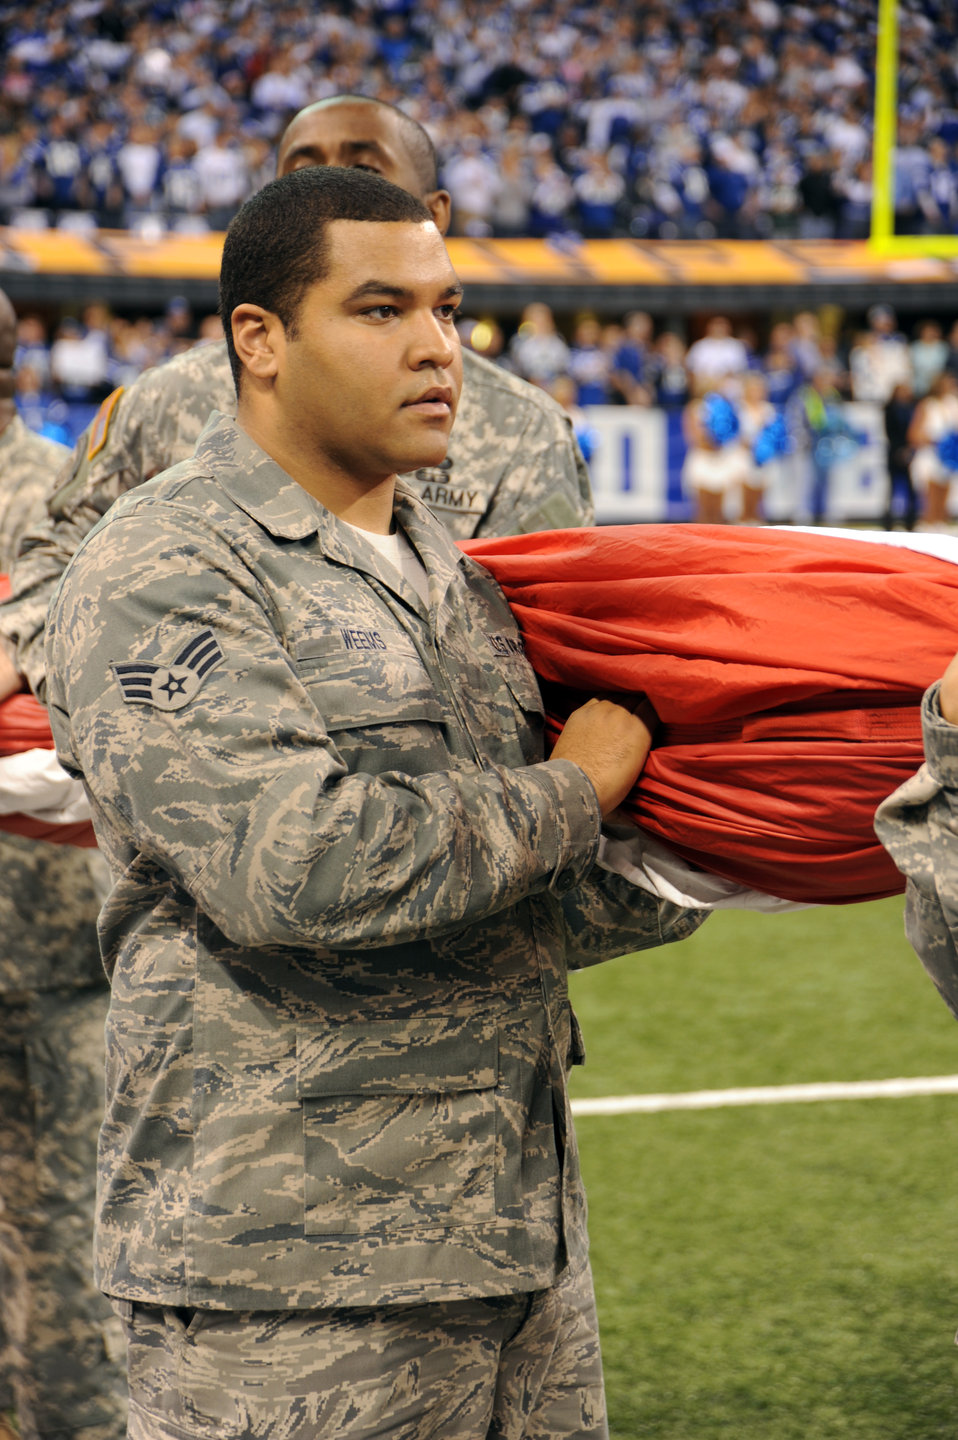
Airmen honor the colors before NFL's AFC Championship Game

Senior Airman Brandon Weems holds on to a 100-yard-long American flag during the national anthem of the NFL's American Football Conference Championship Game between the New York Jets and the Indianapolis Colts in Indianapolis, Ind. The Colts won the game 30-17 and will face the New Orleans Saints in the Super Bowl Feb. 7, 2010, in Miami. Airman Weems is from the Indiana National Guard.